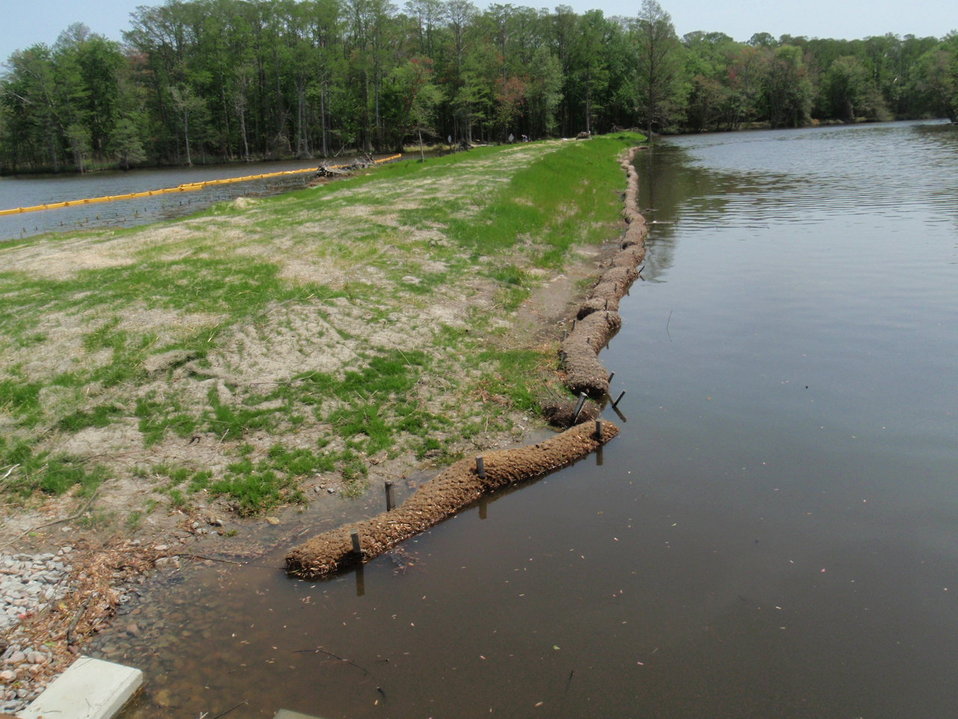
Berm between Ashevilled Bridge Canal and Lake Tecumseh

The berm between Asheville Brudge Canal and Lake Tecumseh after restoration. Prior to project completion, the berm was taller but was experiencing signifcant erosion and was very narrow in certain areas.